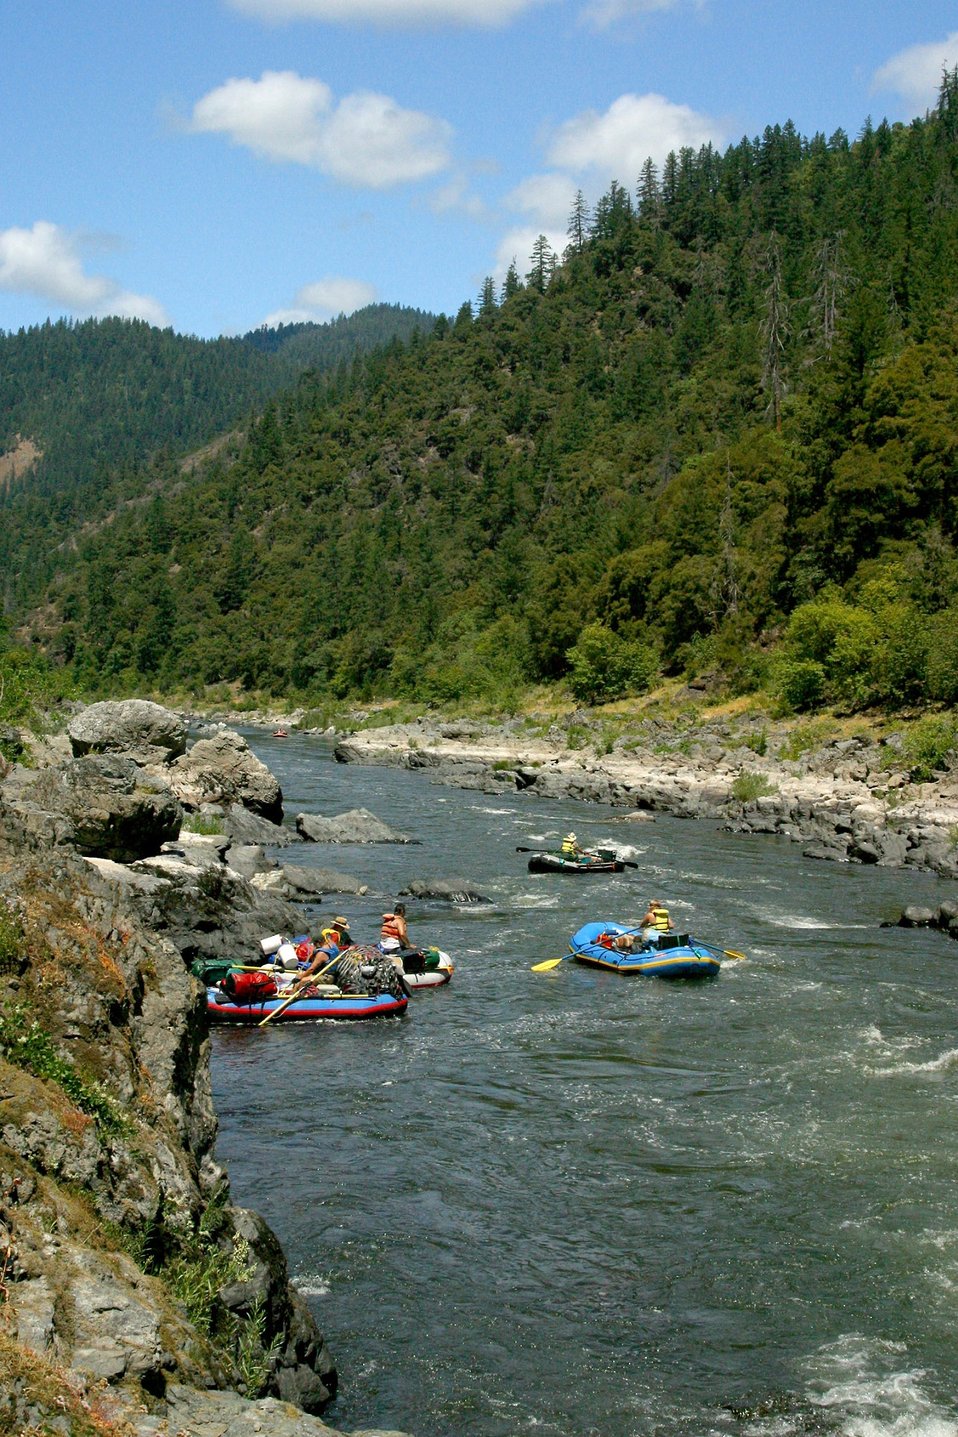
Looking down river below Rainie Falls